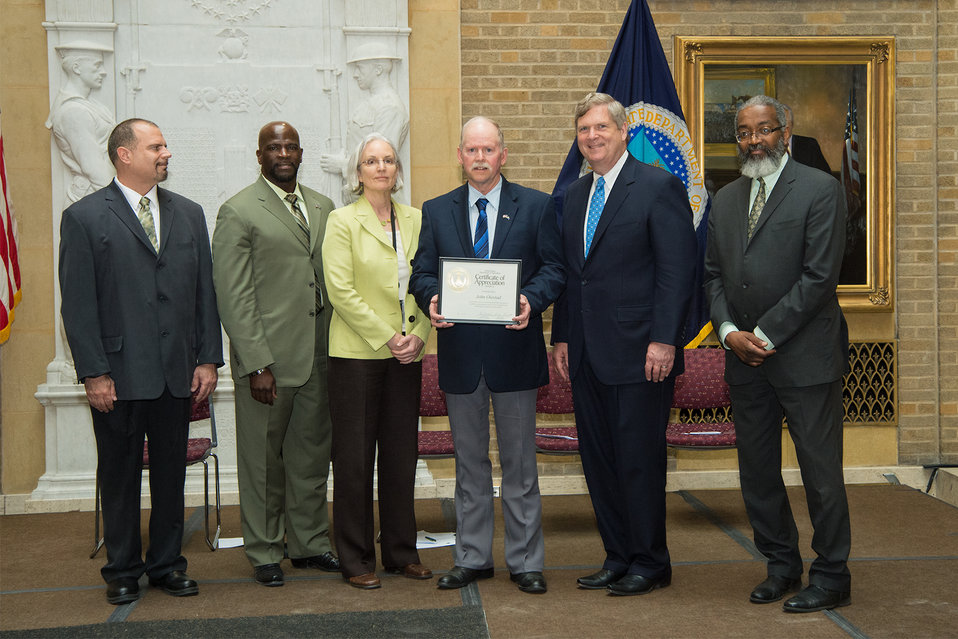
U.S. Department of Agriculture (USDA) Natural Resources Conservation Service (NRCS) Montana John Oiestad receives the Unsung Hero Award from USDA’s Organization of Professional Employees President (OPEDA) Louis Iacoletti, West Region Regional Conservationist Aston Boozer, USDA Natural Resources and Environment (NRE) Deputy Under Secretary Ann Mills, Agriculture Secretary Tom Vilsack and USDA Assistant Secretary for Administration Dr. Gregory Parham at USDA in Washington, D.C. on Wednesday, May 7, 2014.